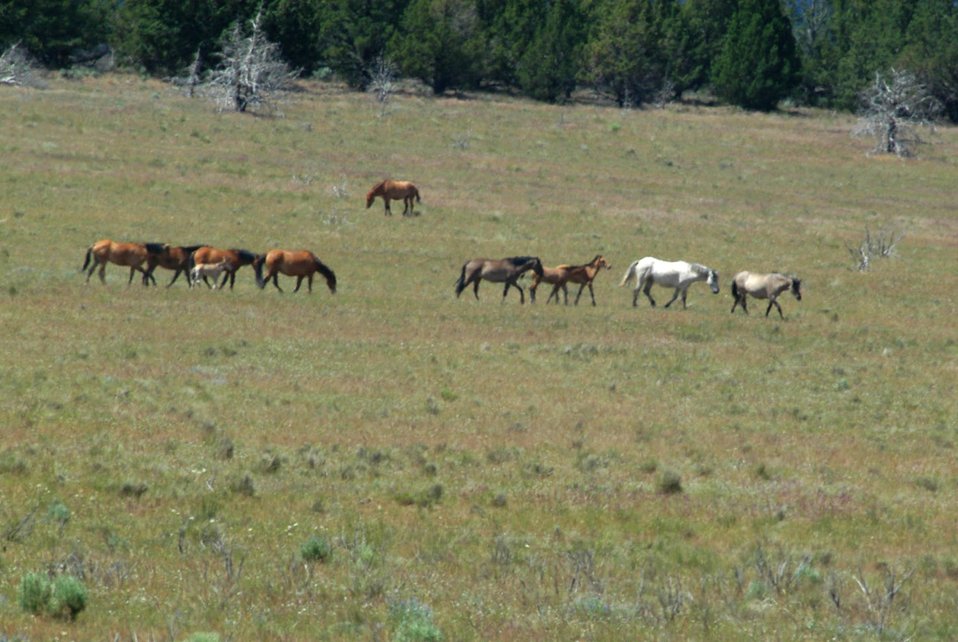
Kiger horses roam the plateaus of the Kiger Wildhorse Herd Management Area near Steens Mountain in Southeastern Oregon.